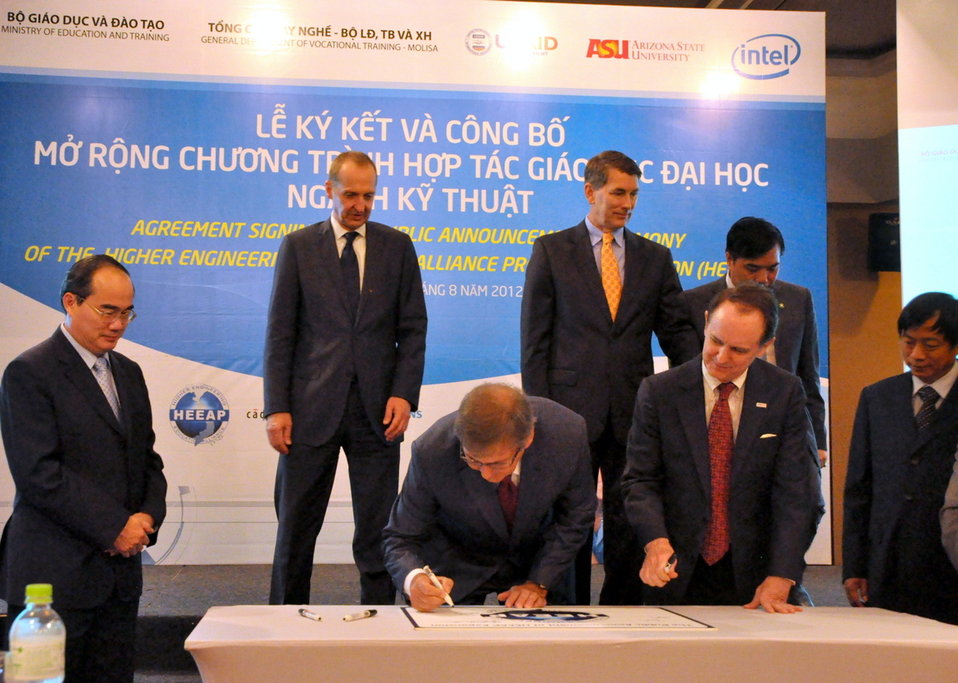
Higher Engineering Education Alliance Program Expansion Launch

Hanoi, August 20, 2012.